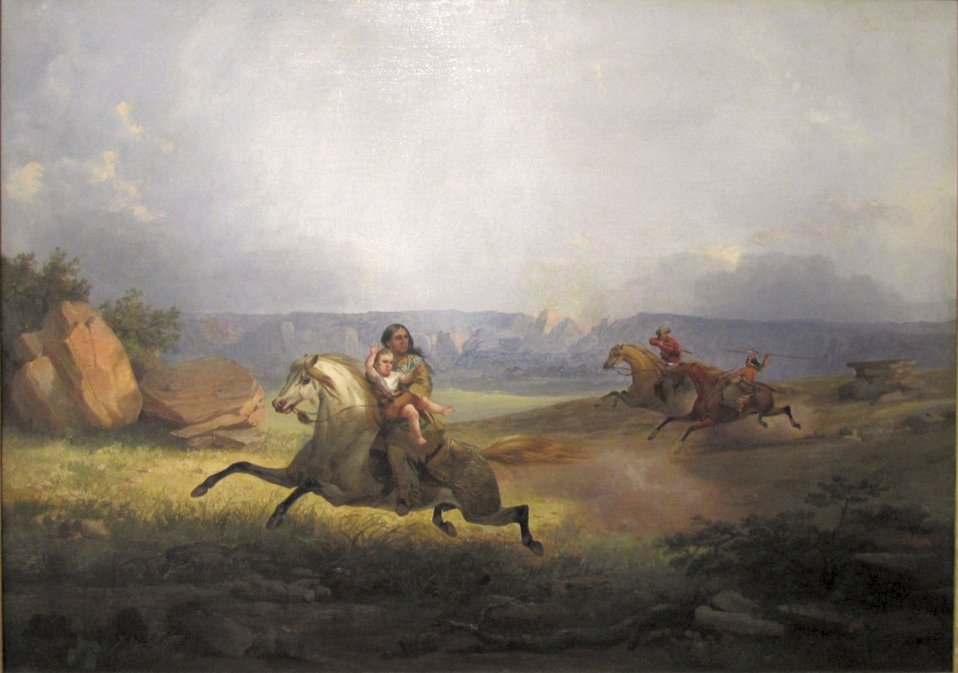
'Kidnapped', oil on canvas painting by John Mix Stanley, c. 1853, Denver Art Museum